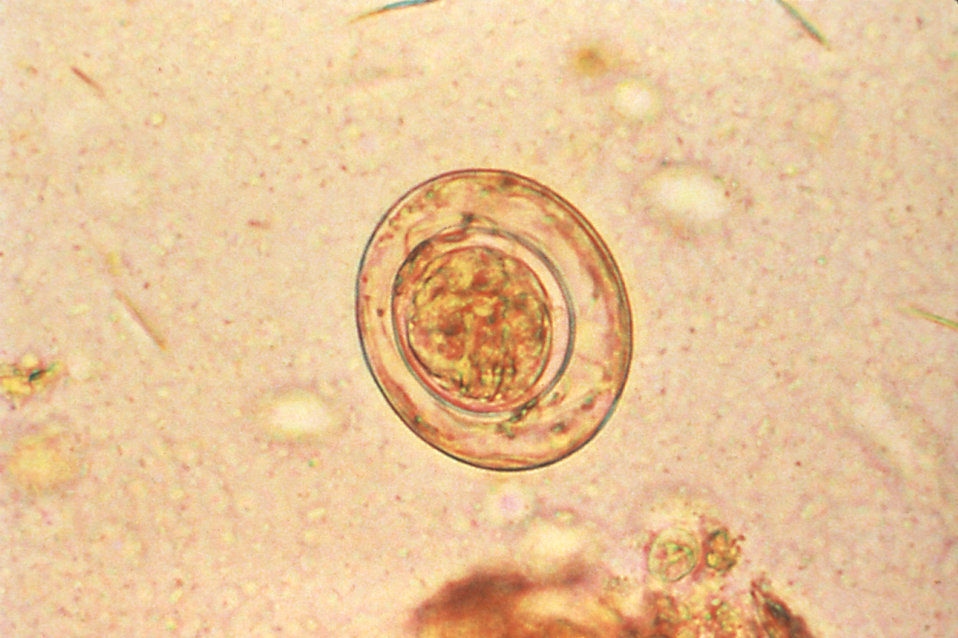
This micrograph depicts an egg of the dwarf tapeworm Hymenolepis nana.